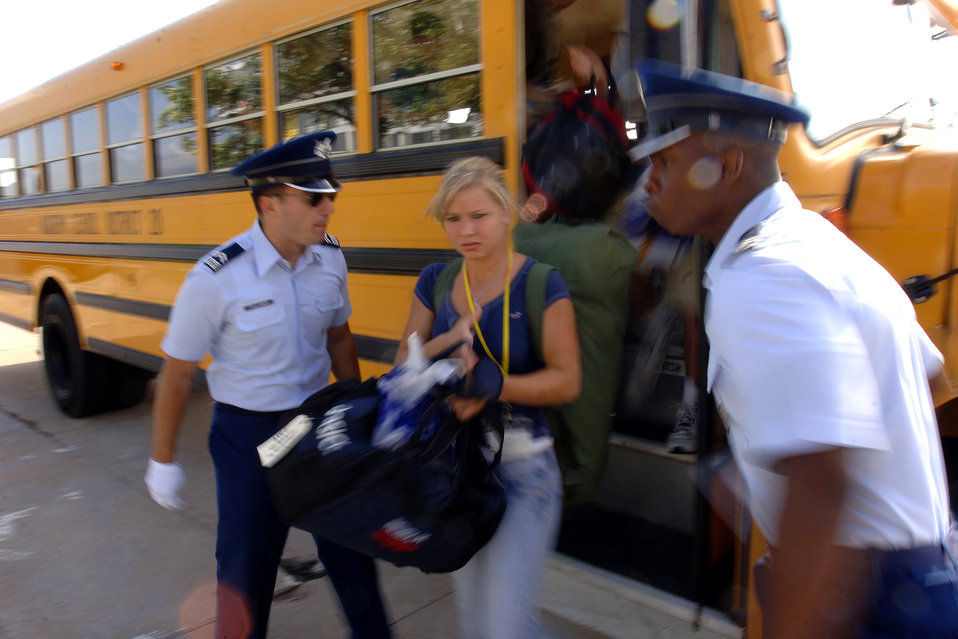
Welcome to the Air Force

Basic cadet trainees exit the bus as they begin inprocessing as the Class of 2011 June 28 at the U.S. Air Force Academy in Colorado. The 1,304 members of the U.S. Air Force Academy's Class of 2011 arrived to in-process and begin basic cadet training here.